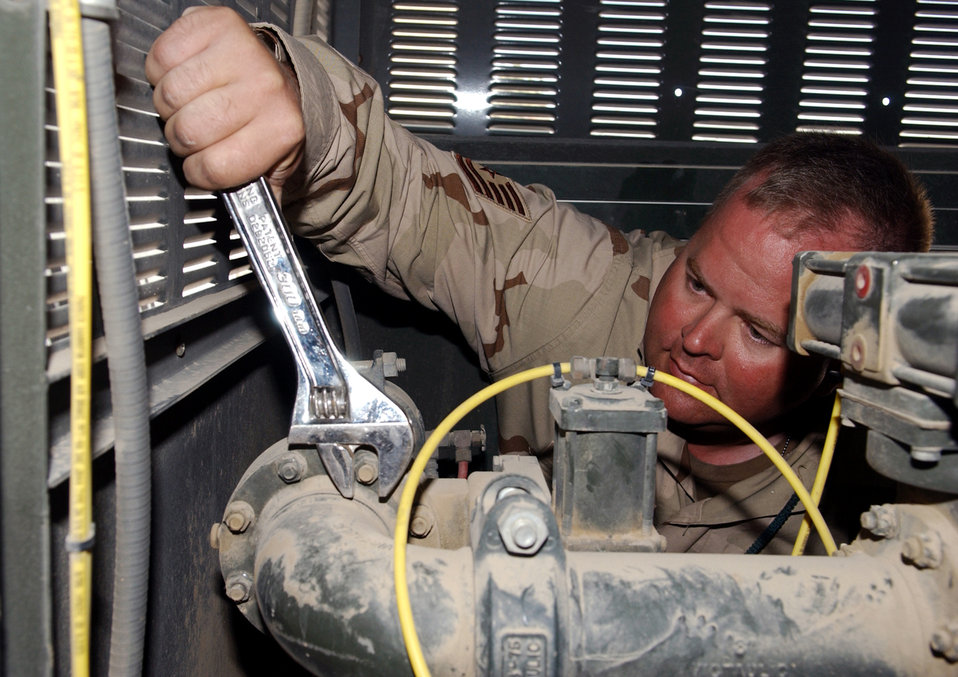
Tighten it up

BAGRAM AIR BASE, Afghanistan -- Tech. Sgt. Douglas McDonald tightens the hose reel valve assembly that helps direct the flow of fuel on a refueling truck. Sergeant McDonald is assigned to the 455th Expeditionary Logistics Readiness Squadron here supporting Operation Enduring Freedom. He is deployed from the 92nd Logistics Readiness Squadron at Fairchild Air Force Base, Wash.